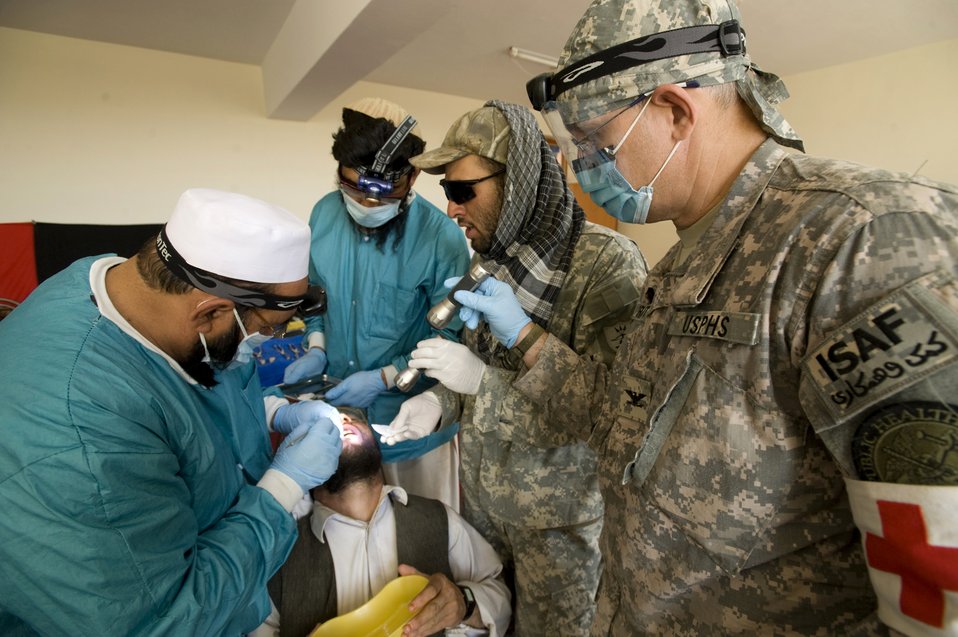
Servicemembers provide dental training for Afghans

Capt. (Dr.) Charles Craft watches as Afghan dentists examines an Afghan's teeth during a village dental outreach visit Oct. 11 in Zabul, Afghanistan. Captain Craft provided the dentist and Zabul Provincial Reconstruction Team medics five-weeks of field dental care training. The course was launched here to enhance the skills of four area non-governmental organization dental professionals; providing them the ability to establish free field clinics with infection control standards in place to offer emergency extractions and routine cleanings. Captain Craft is with the U.S. Public Health Service.